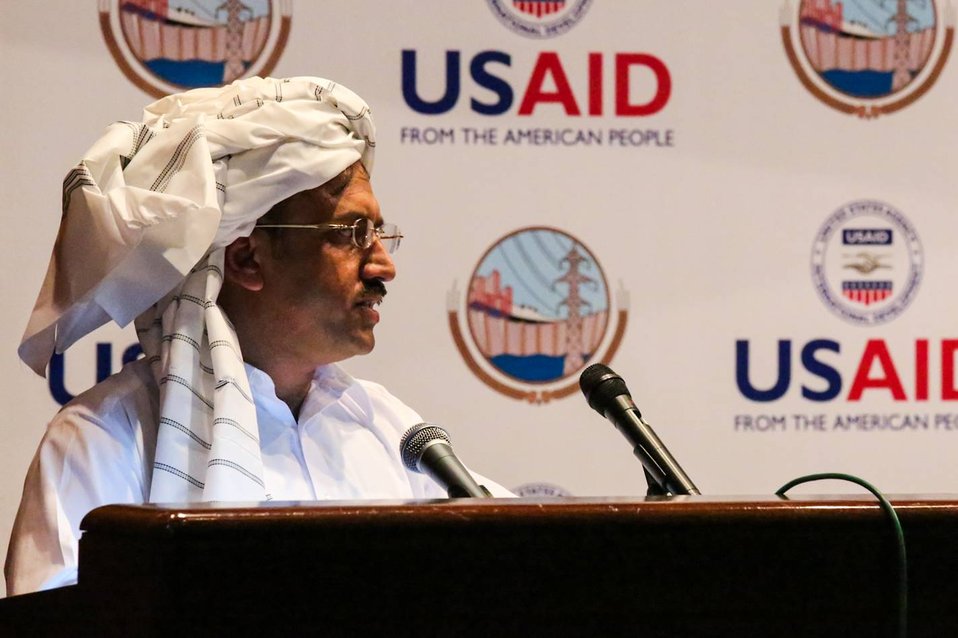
Islamabad, September 12, 2012 - Project Launch Ceremony of Waran Canal Irrigation System